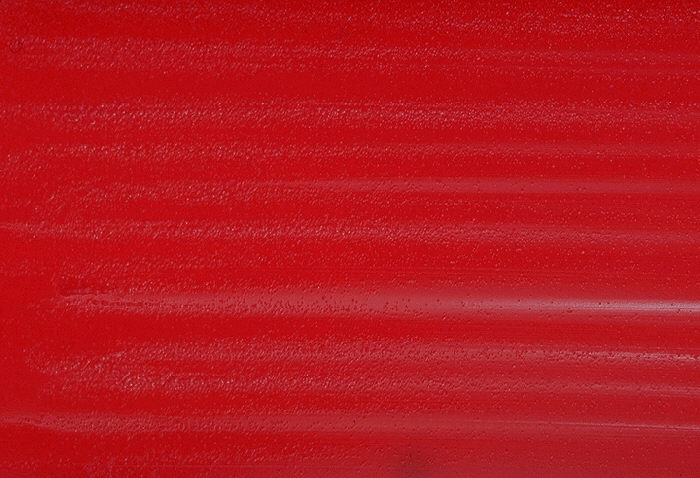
Blood agar plate culture of Cardiobacterium hominis.